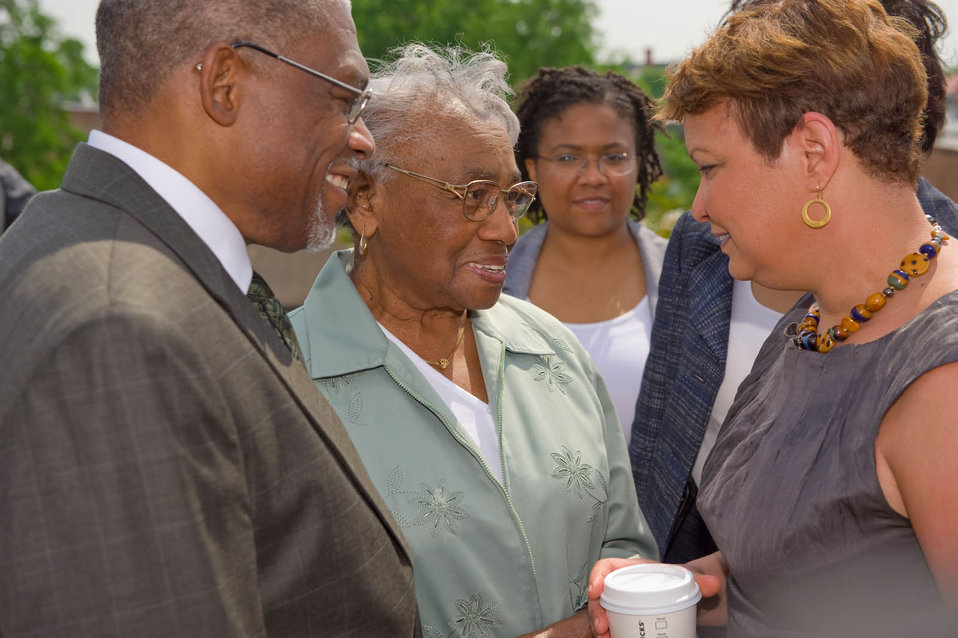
2011-05-03 FlaAveSolar 037